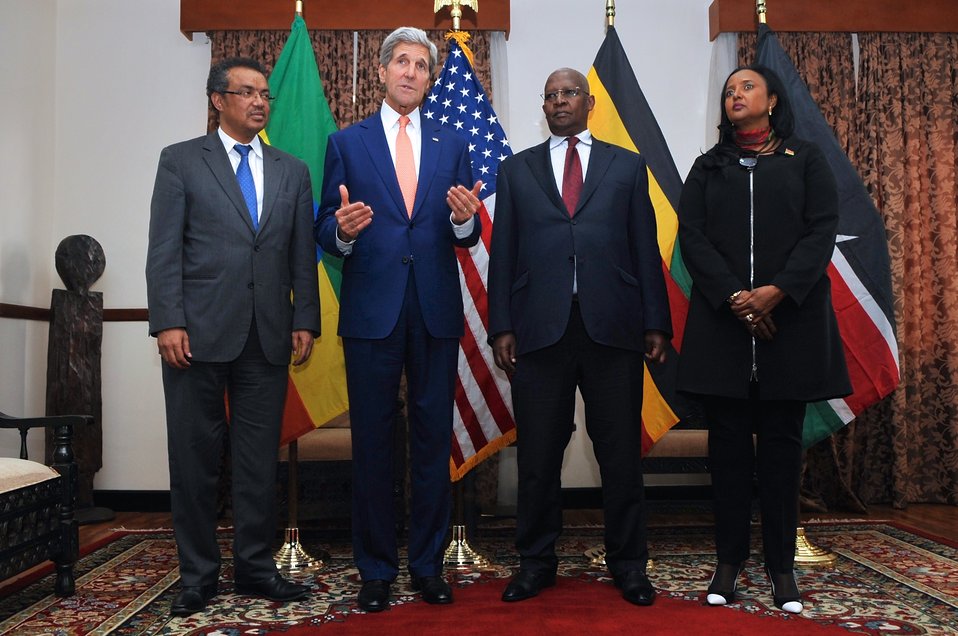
Secretary Kerry Addresses Reporters After Meeting With Ethiopian Regional Foreign Ministers

U.S. Secretary of State John Kerry, flanked on the left by Ethiopian Foreign Minister Tedros Adhanom and the right by Ugandan Foreign Minister Sam Kutesa and Kenyan Foreign Minister Amina Mohamed, addresses reporters after the group discussed regional issues in Addis Ababa on May 1, 2014.